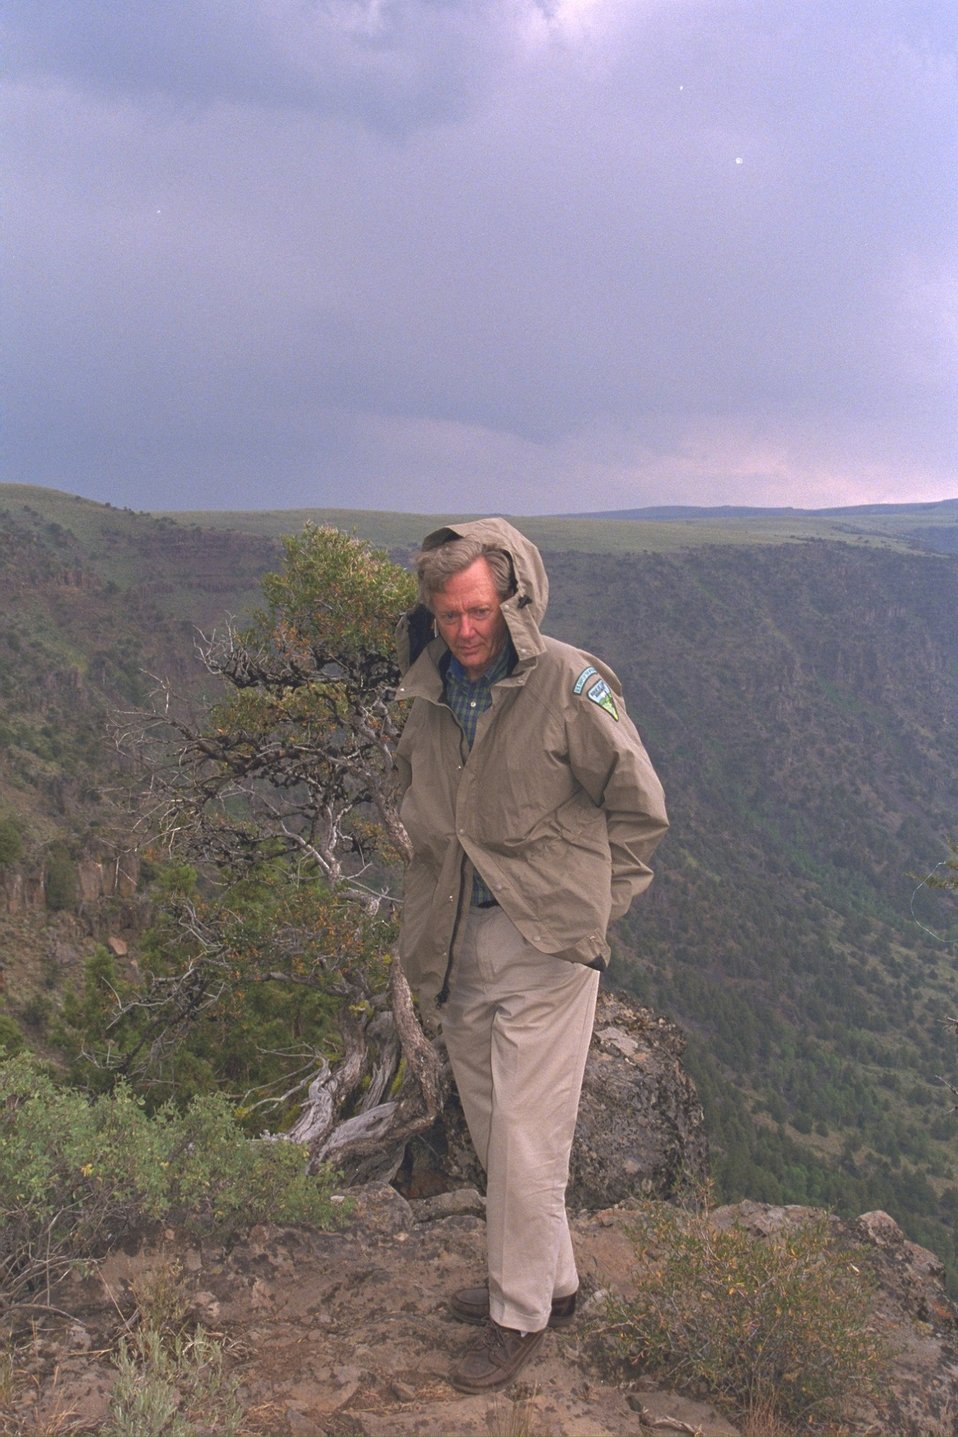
Secretary of the Interior, Bruce Babbitt, at Big Indian Gorge on Steens Mountain.